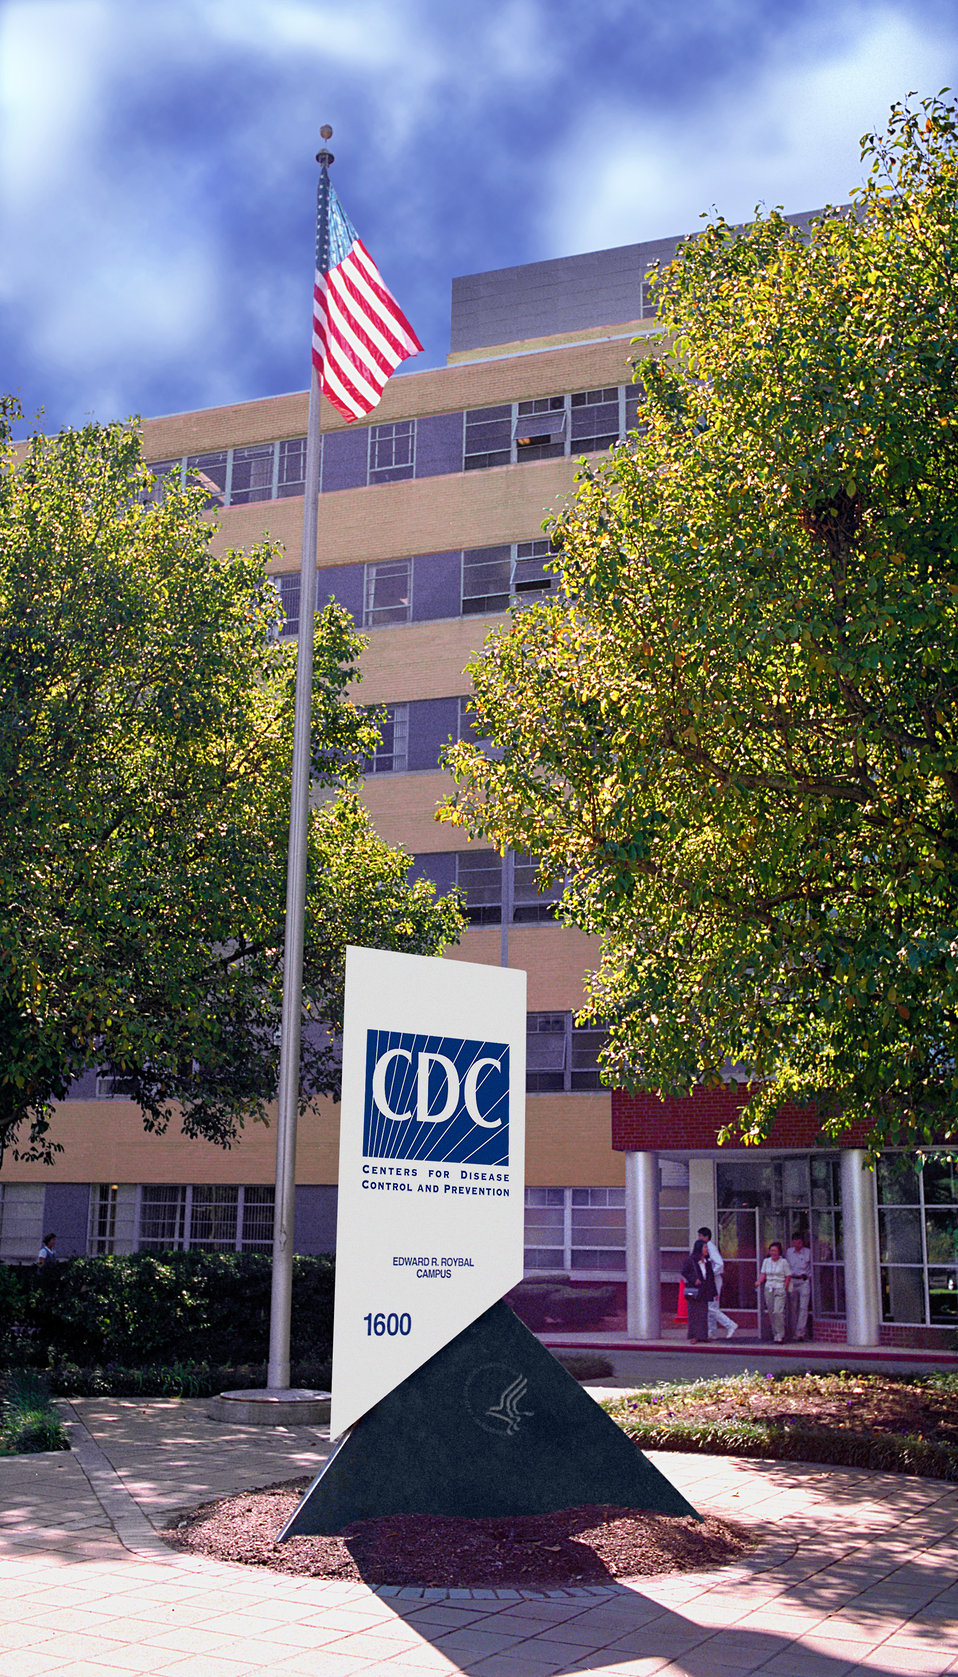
This was the former front Entrance to CDC, Building 1, Roybal Campus in Atlanta, Georgia.